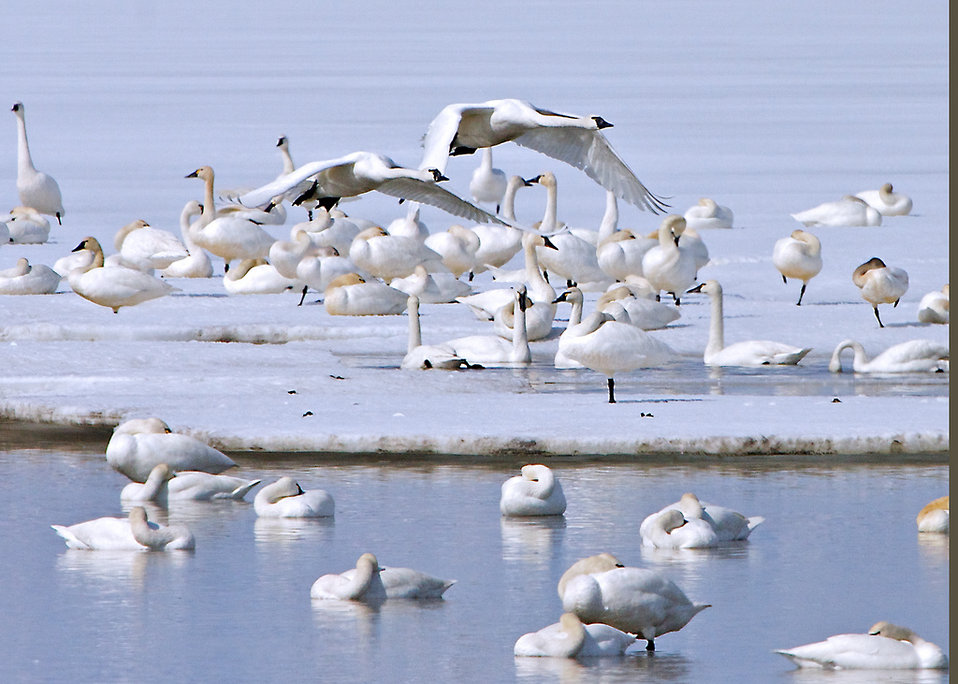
tundra swans